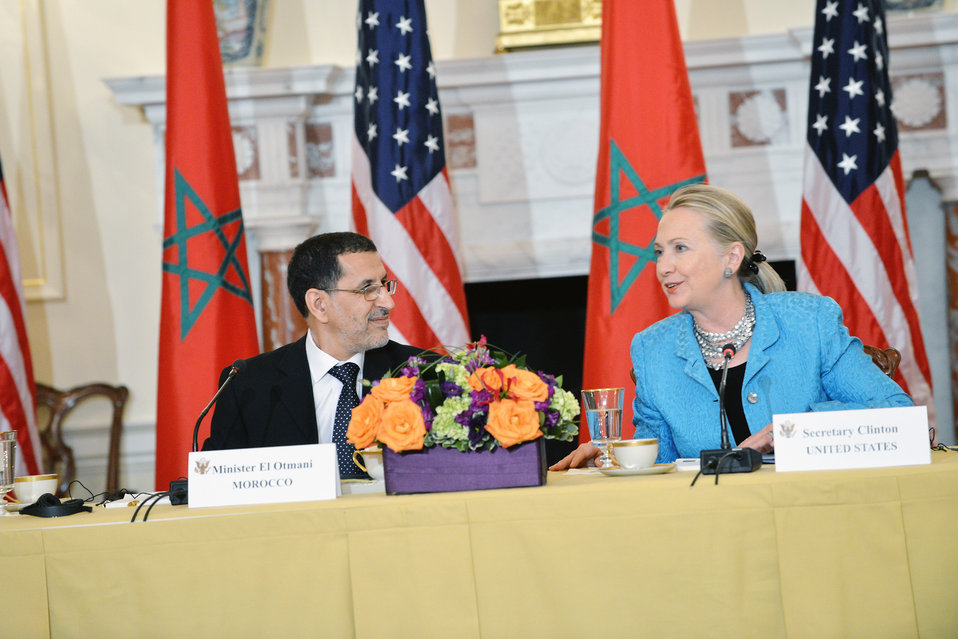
Secretary Clinton Delivers Remarks With Moroccan Foreign Minister Al-Othmani

U.S. Secretary of State Hillary Rodham Clinton deliver remarks with Moroccan Foreign Minister Saad-Eddine Al-Othmani at the U.S.-Morocco Strategic Dialogue at the U.S. Department of State in Washington, D.C. on September 13, 2012.